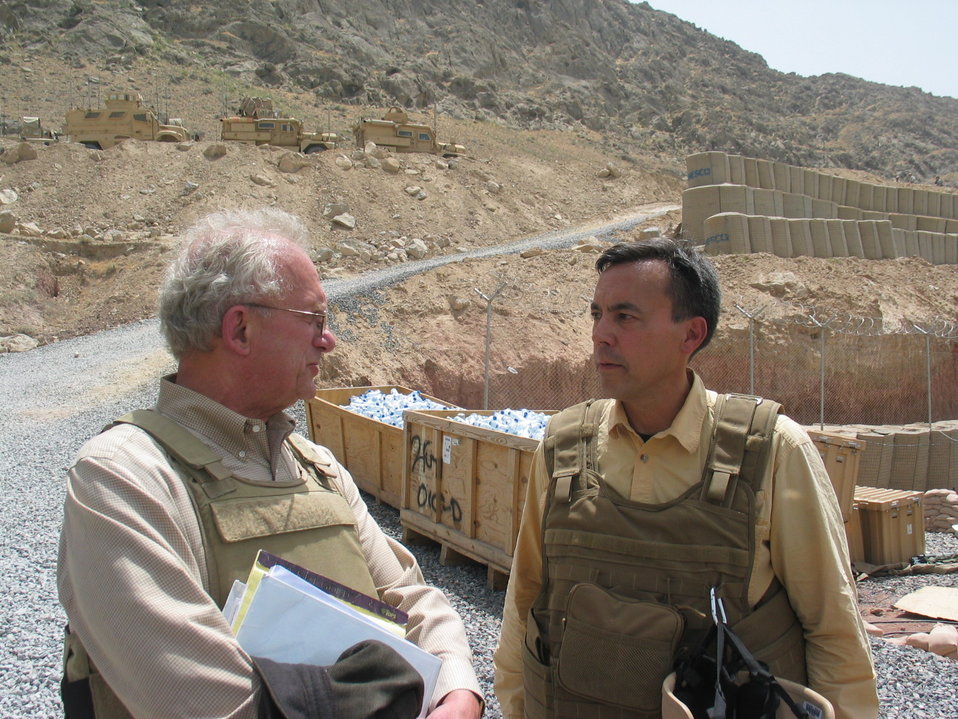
CODEL Berman